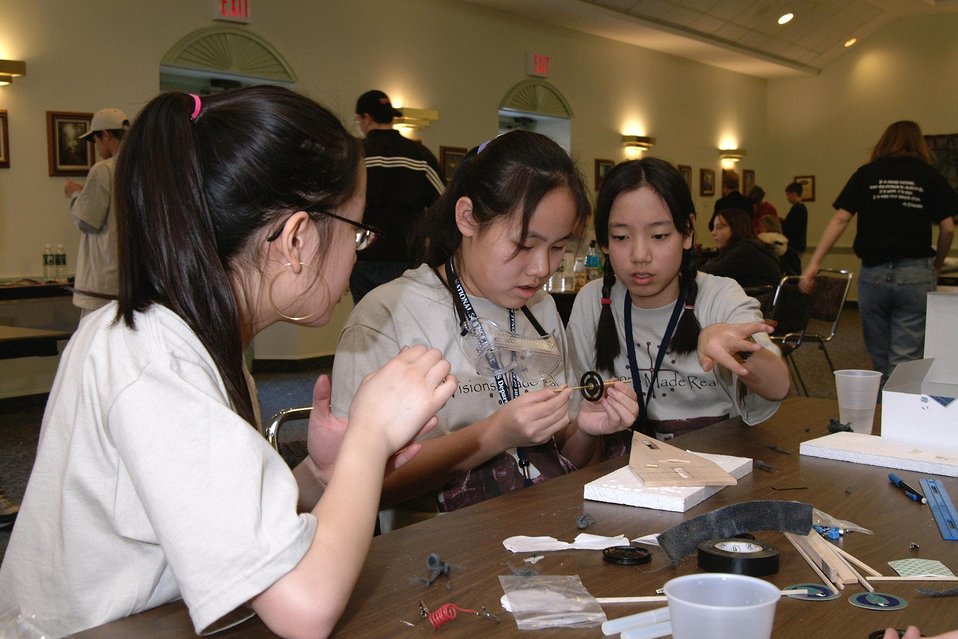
TEAM FROM HONEY CREEK MIDDLE SCHOOL, TERRE HAUTE, IN, BUILDING THEIR MODEL SOLAR CAR.

THE DEPARTMENT OF ENERGY SPONSORED THE FIRST NATIONAL MIDDLE SCHOOL SCIENCE BOWL ON MARCH 21-24, 2002 IN WASHINGTON, DC AT DOE HEADQUARTERS FORRESTAL BUILDING. ON MARCH 23RD THE COMPETITION INCLUDED A MODEL SOLAR CAR RACE HELD AT THE NATIONAL 4-H CONFERENCE CENTER, CHEVY CHASE, MD. THE MODEL CARS WERE DESIGNED AND CONSTRUCTED BY THE TEAM MEMBERS.